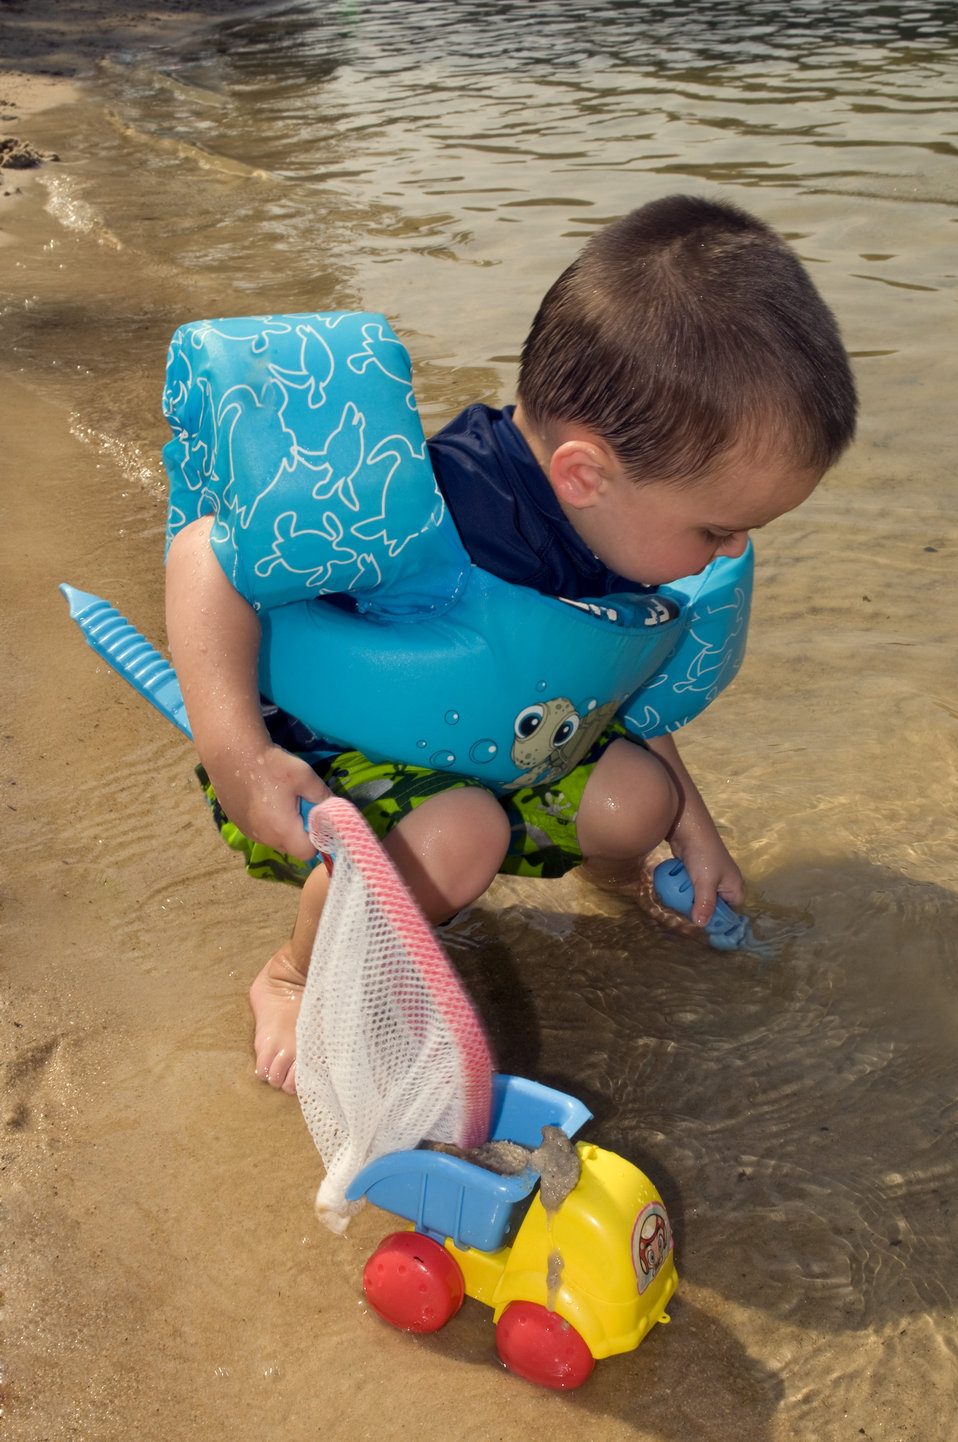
This young boy was kneeling at the water's edge holding a toy fishnet with his right hand, and a plastic strainer with his left, which he was using to strain some wet sand at the shoreline. Sunscreen had been applied to his minimally-exposed skin, and he was wearing a darkly-colored shirt in order to prevent overexposure to the sun's harmful ultraviolet rays. He'd also been equipped with an air-filled floatation garment that was wrapped around his torso, and upper arms.